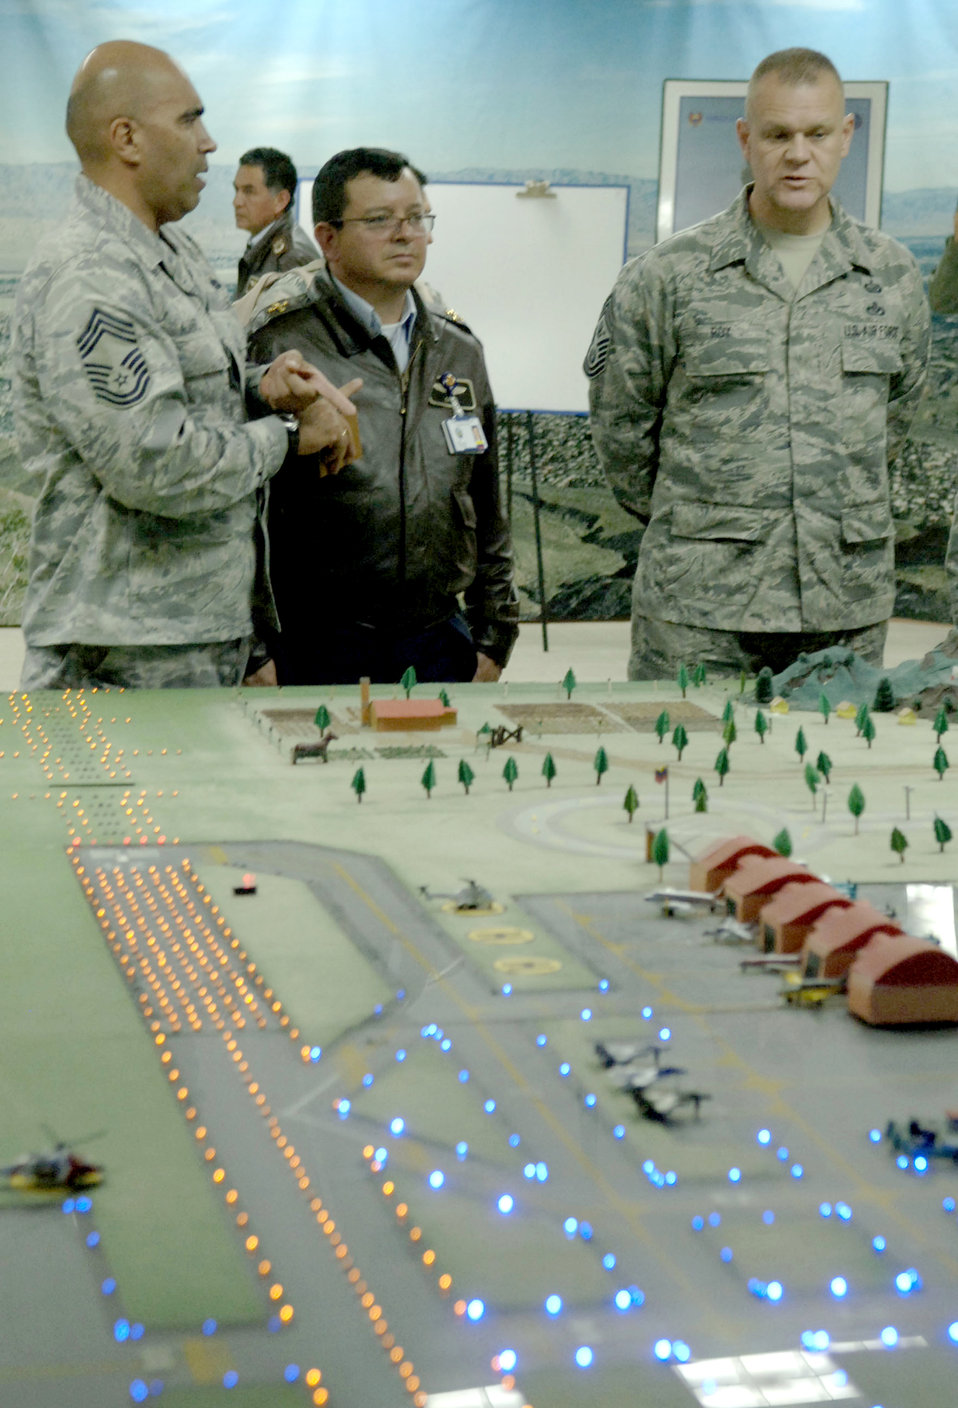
Chief Roy

Chief Master Sgt. Andres Alvarez (left), an Inter-American Air Force Academy command chief, translates for Chief Master Sgt. of the Air Force James A. Roy (right) during a discussion with Colombian Col. Cano, the commander of the Colombian air force Escuela de Suboficiales Feb. 1, 2011, in Bogota. The Escuela de Suboficiales is a three-year NCO academy which grants undergraduate degrees in military specialties to more than 100 students per year.